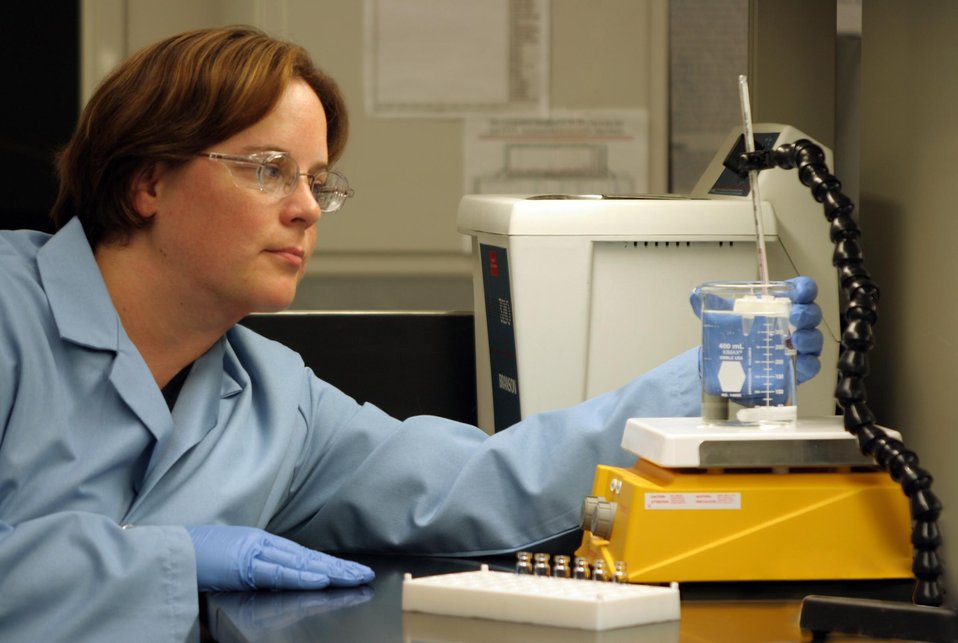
A PACIFIC NORTHWEST NATIONAL LABORATORY SCIENTIST PREPARES BACTERIAL SPORE SAMPLES FOR AGAR ANALYSIS.

AGAR IS A SOLID SUPPORT FOR GROWTH MEDIA. IF HEATED IN A WATER BATH, THE SAMPLE MELTS THE RESIDUAL AGAR AGAR FROM THE SAMPLE. DISCOVERING THE EXISTENCE OR ABSENCE OF AGAR IN A SPORE SAMPLE PROVIDES IMPORTANT DATA FOR FORENSICS IN NATIONAL SECURITY.